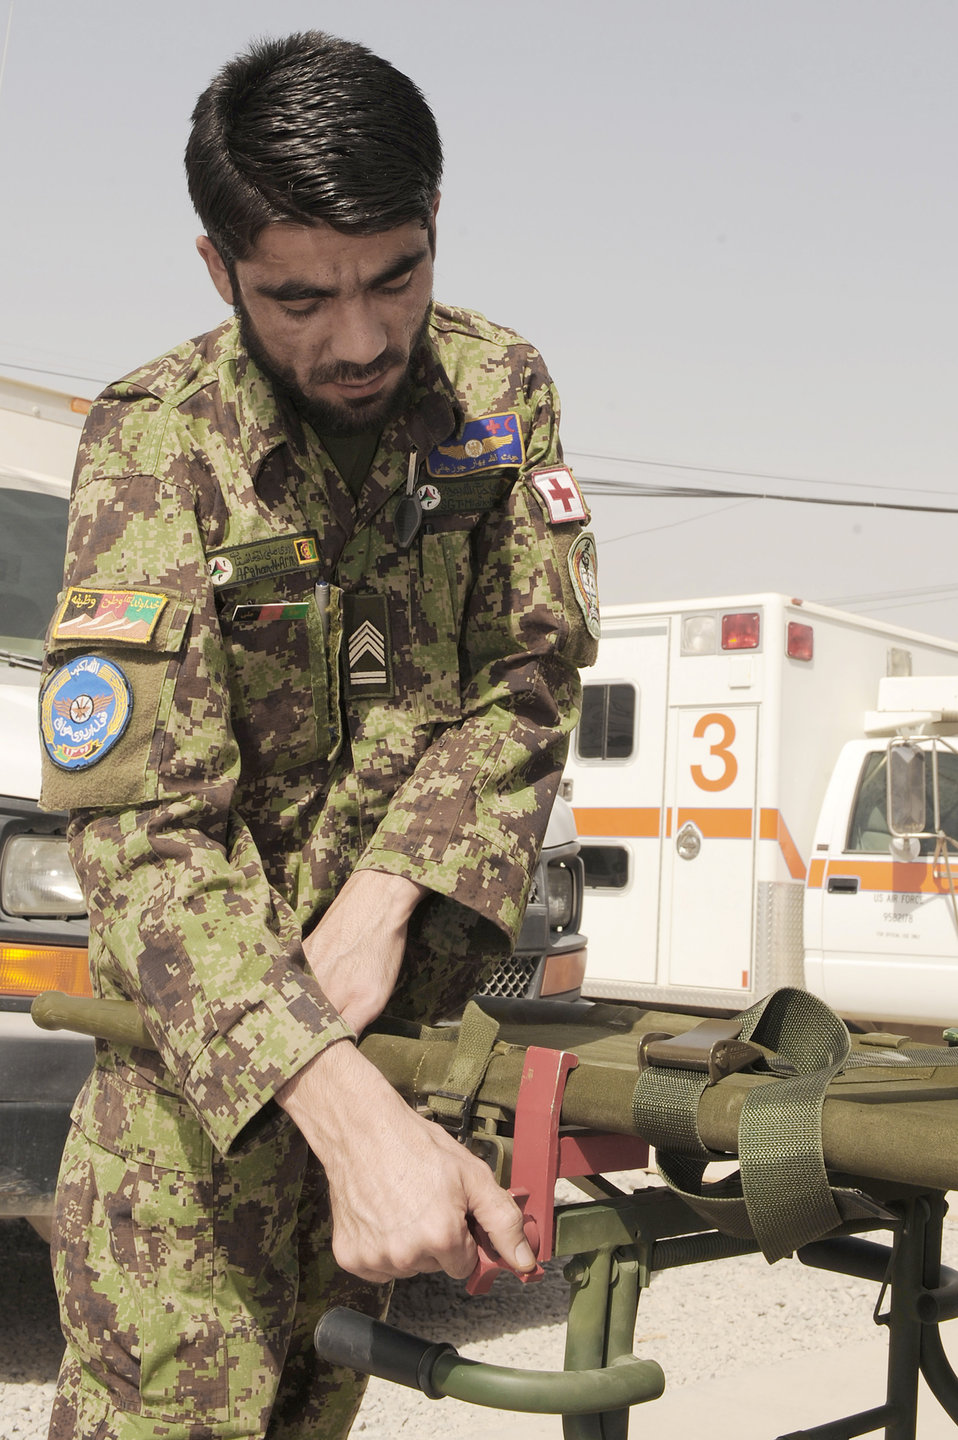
Medics showcase patient care concepts to Afghan airmen

An Afghan flight medic tightens a clamp on a gurney to a patient litter during a patient care concepts orientation Sept. 8, 2010, at Kandahar Airfield, Afghanistan.